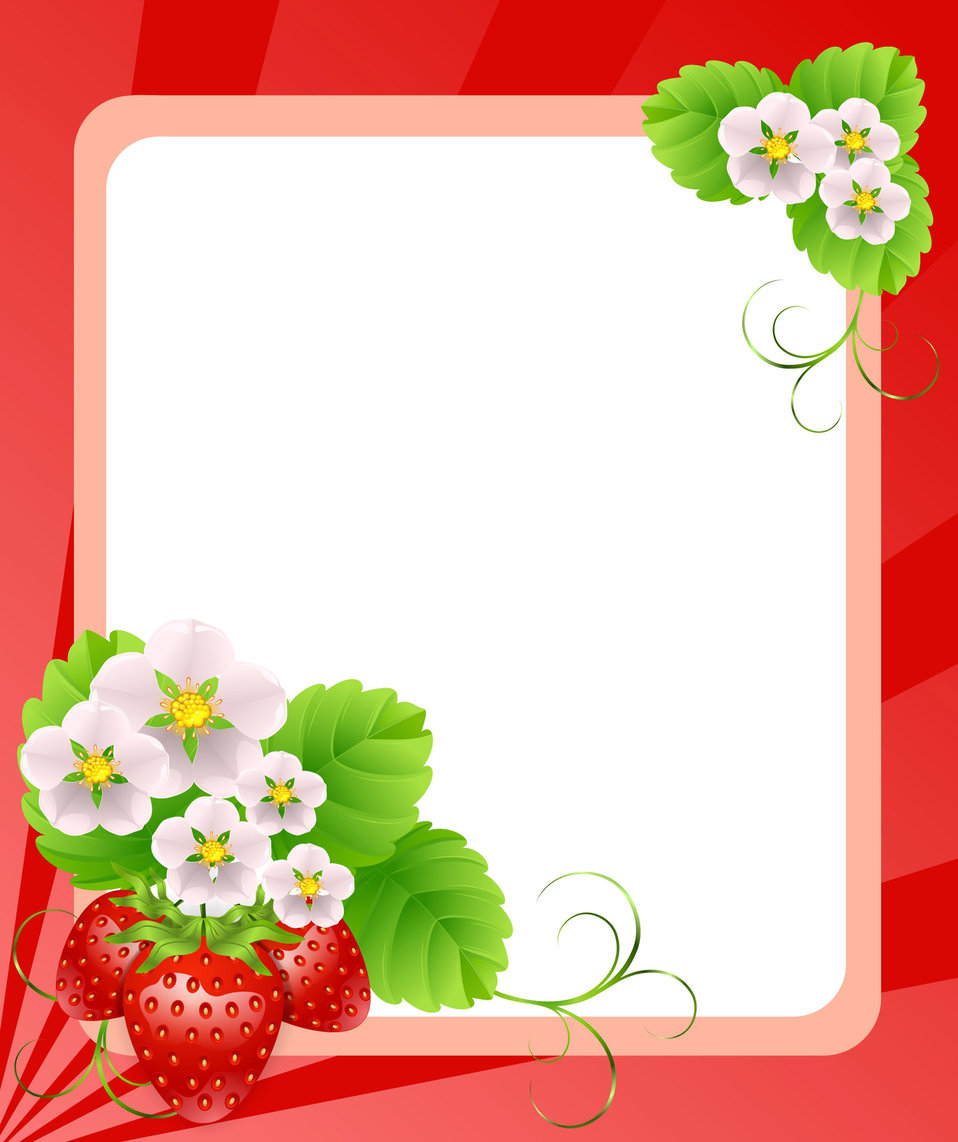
Background with strawberries

Gentle background surrounded by strawberries and flowers.